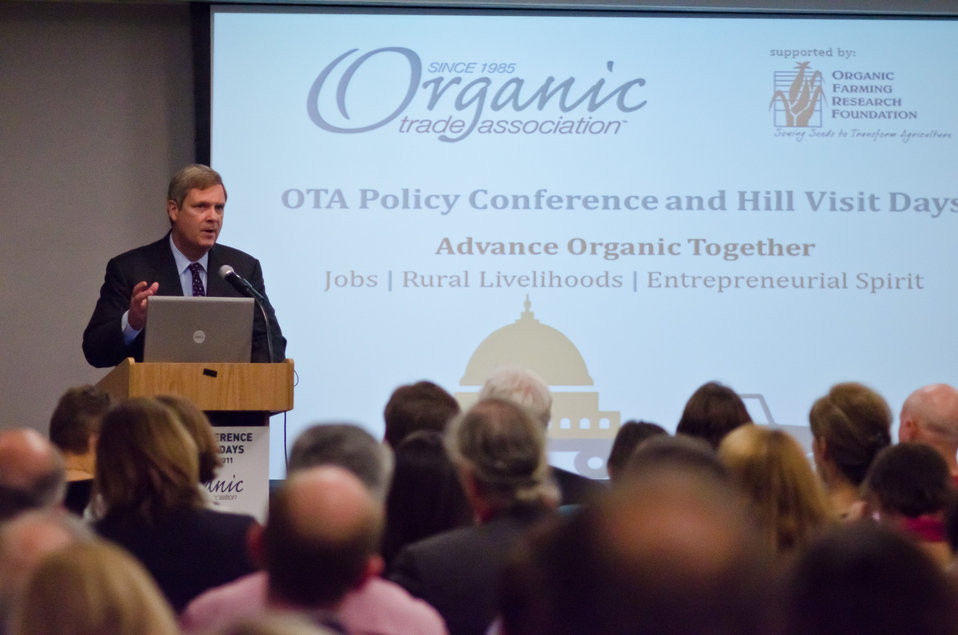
U.S. Department of Agriculture Secretary Tom Vilsack spoke and took questions at the Organic Trade Association’s, 2011 Policy Conference at the Hall of States, on Wednesday, April 6, 2011 in Washington, DC.